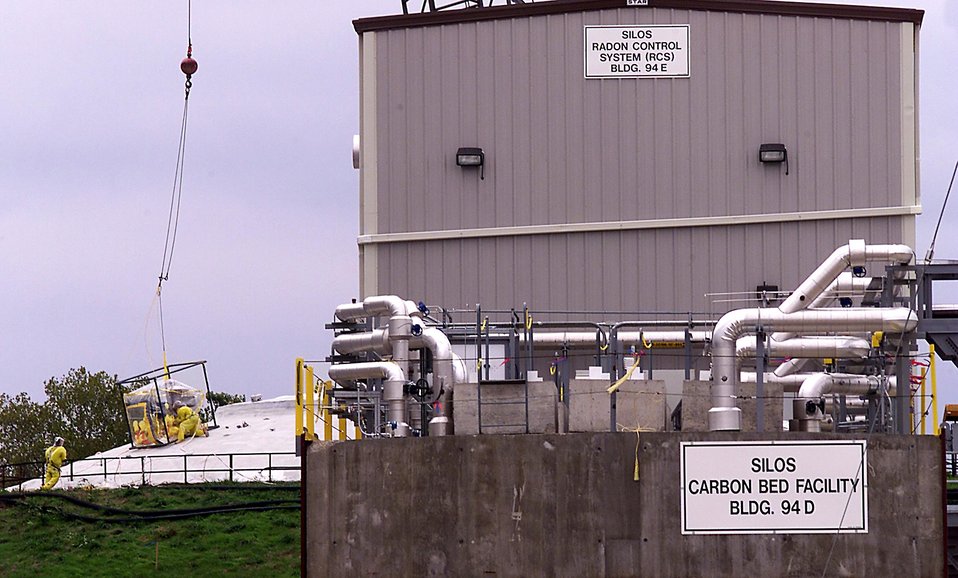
DOE'S FERNALD SITE USES RADON CONTROL SYSTEM TO REDUCE LEVELS IN WASTE SILOS.

A RADON CONTROL SYSTEM WAS INSTALLED AT FERNALD IN DECEMBER, 2002. THE CONCENTRATION OF RADON GAS HAS BEEN REDUCED IN TWO CONCRETE WASTE STORAGE SILOS BY 95 PERCENT. THE K-65 SILOS CONTAIN 8,900 CUBIC YARDS OF LOW-LEVEL RADIUM-BEARING WASTE DATING BACK TO THE 1950'S.